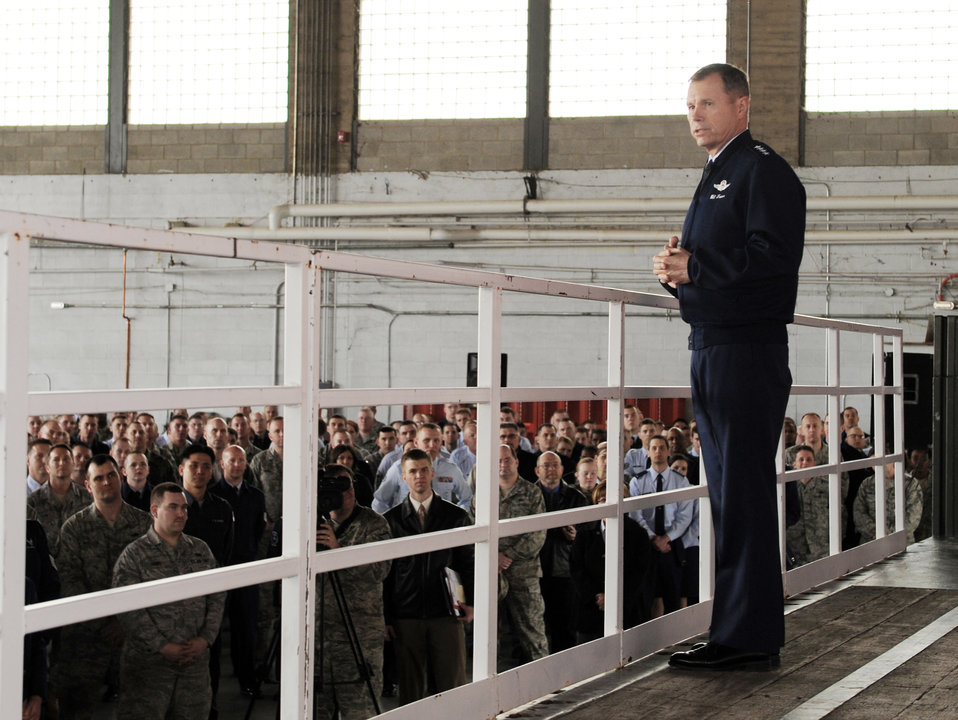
Air Combat Command leader visits Mountain Home Airmen

Gen. William M. Fraser III speaks to Airmen at a commander's call during his visit March 8, 2010, to Mountain Home Air Force Base, Idaho. General Fraser is the commander of Air Combat Command.